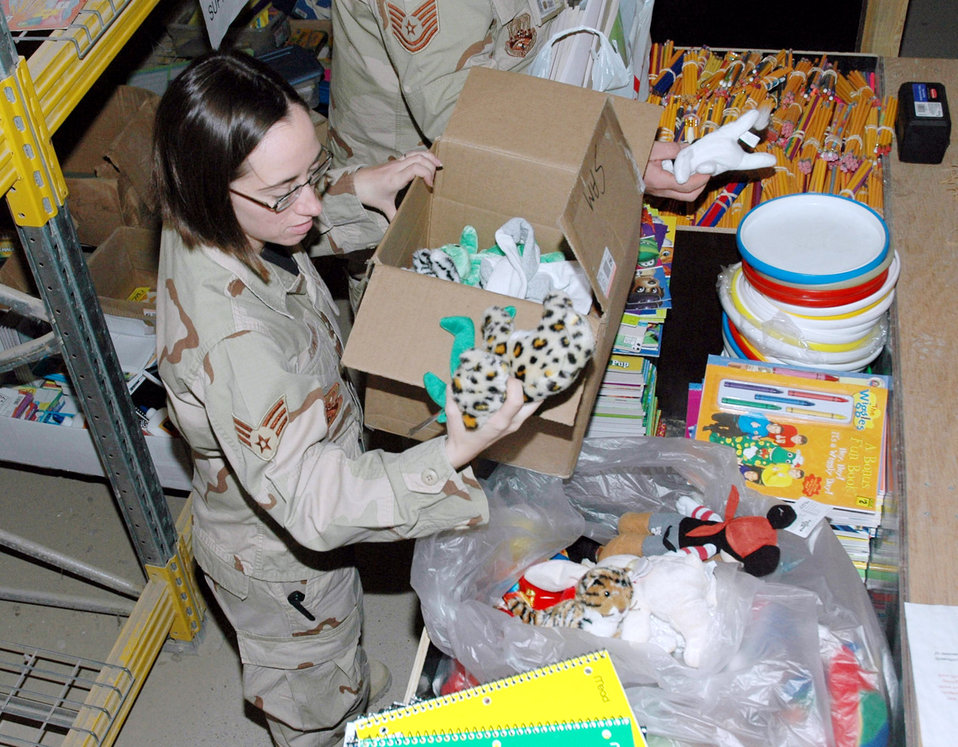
Making Iraq's future brighter: Operation School Supplies

Senior Airman Misty Edwards sorts through toys and school supplies donated by individuals and organizations in the U.S. for Operation School Supplies at Kirkuk Air Base, Iraq. Airman Edwards, with the help of volunteers throughout Kirkuk AB, sorted, organized and delivered almost 5,000 pounds of school supplies since arriving in January. Airman Edwards is assigned to the 506th Air Expeditionary Group.